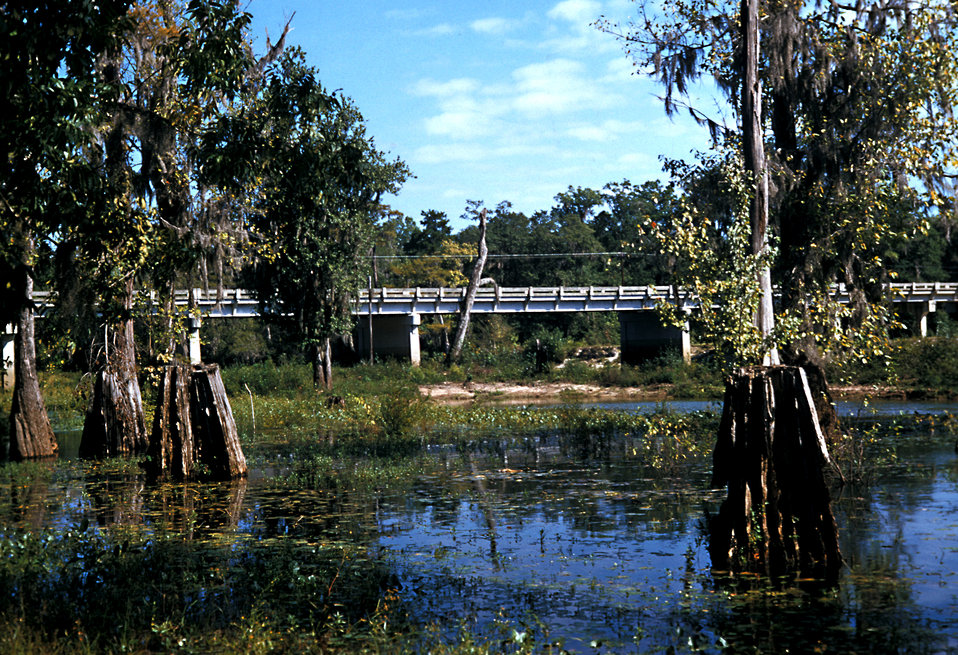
This Cypress swamp can be home to a number of different species of mosquitoes.